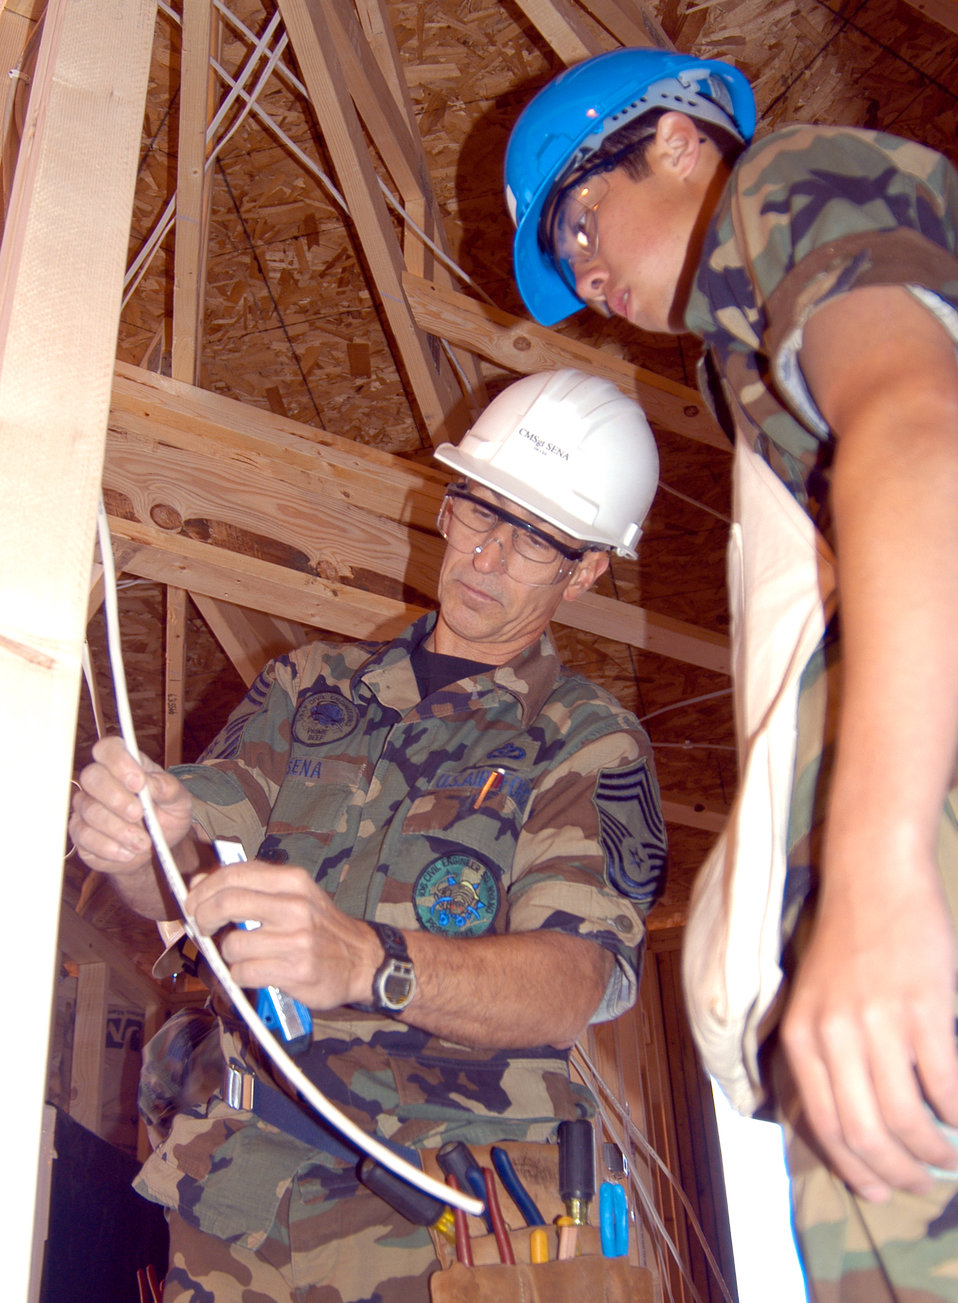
Listen to the chief

U.S. AIR FORCE ACADEMY, Colo. -- Chief Master Sgt. Tony Sena explains the basics of electrical wiring to Cadet 2nd Class Michael Nuss during construction of a Navajo hogan here June 12. The hogans, a traditional Navajo eight-sided structure, are scheduled to be delivered to the Navajo nation in Gallup, N.M., in October. Sena is from the New York Air National Guard's 106th Rescue Wing at West Hampton Beach, N.Y.